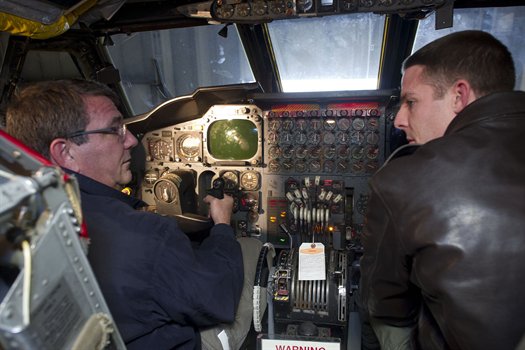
Deputy SecDef

Capt. Mike Hostetler, right, shows Deputy Defense Secretary Ashton B. Carter the cockpit of a B-52 bomber at Minot Air Force Base, N.D., Nov. 2, 2012.